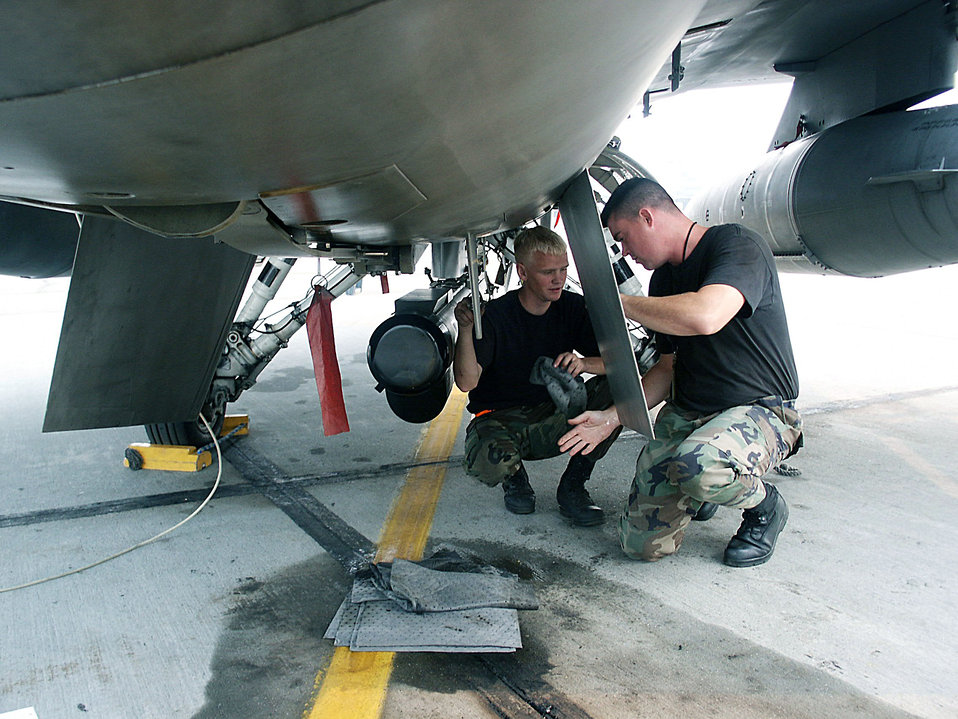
Cope Thunder trains warfighters

EIELSON AIR FORCE BASE, Alaska -- Airman 1st Class Andrew Ringquist (left) and Staff Sgt. Hank Wilson prepare an F-16 Fighting Falcon for a Cope Thunder 04-02 flight here Aug. 17. They are crew chiefs with the 77th Fighter Squadron from Shaw Air Force Base, S.C.